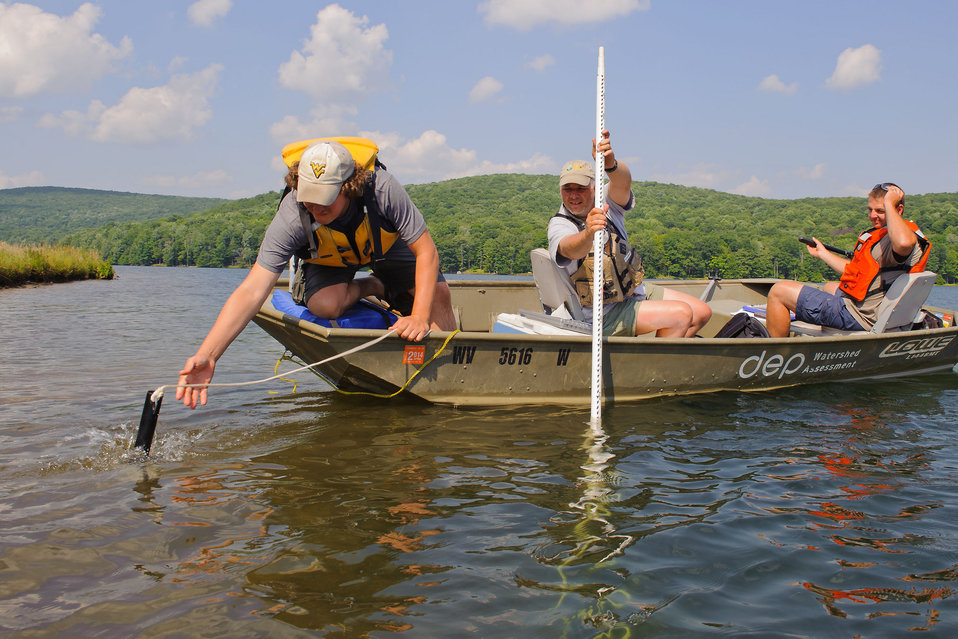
June 19, 2012 Collecting and Assessing Aquatic Plants in Hulls Lake in West Virginia

For the 2012 National Lakes Assessment, Ryan Pack of the West Virginia Department of Environmental Protection (left) drops a rake-like device into Hulls Lake in West Virginia to collect and assess plants that can grow above or below the water, known as aquatic macrophytes. The abundance and type of these plants can a wide range of adverse effects on a lake’s health. Jason Morgan of the West Virginia Department of Environmental Protection (right) and Frank Borsuk of EPA assist.